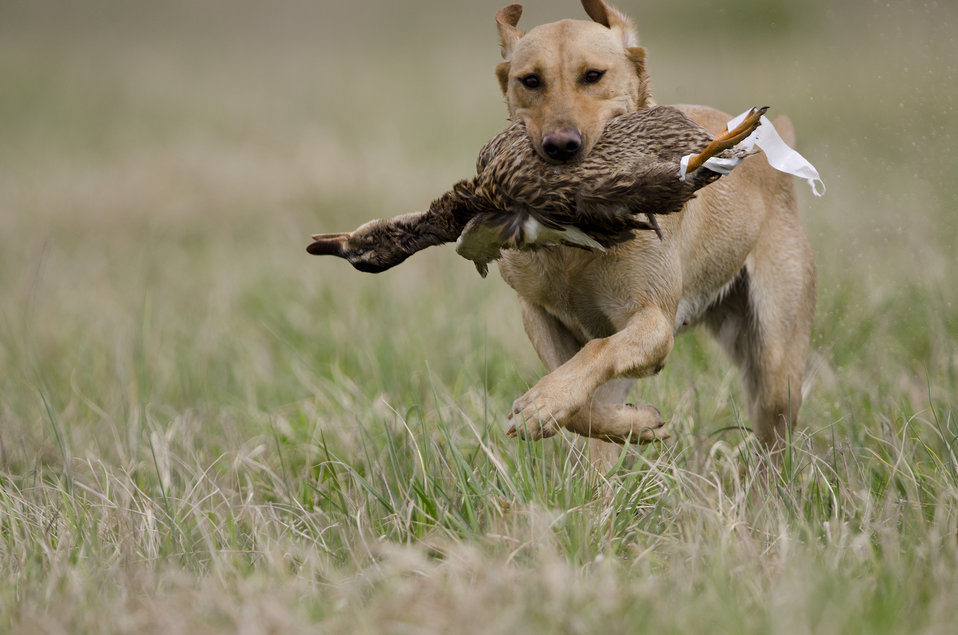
New Signs Direct Recreational Use of Land at DOE’s Paducah Site

New signs are intended to help the public understand the expanded use of public recreational and hunting activities on 1,986 acres of Department of Energy-owned land around the Paducah Gaseous Diffusion Plant.

The changes took effect Jan. 1 after DOE signed a new five-year license agreement with the Kentucky Department of Fish and Wildlife Resources for expanded use of DOE’s portion of the West Kentucky Wildlife Management Area (WKWMA).

Posted in May, the new signs replace yellow DOE no-trespassing signs and require people to check in daily at the WKWMA clubhouse before they use the land. Visitors are instructed to use one of three check-in boxes to fill out basic information cards and drop them in the lower part of the box.